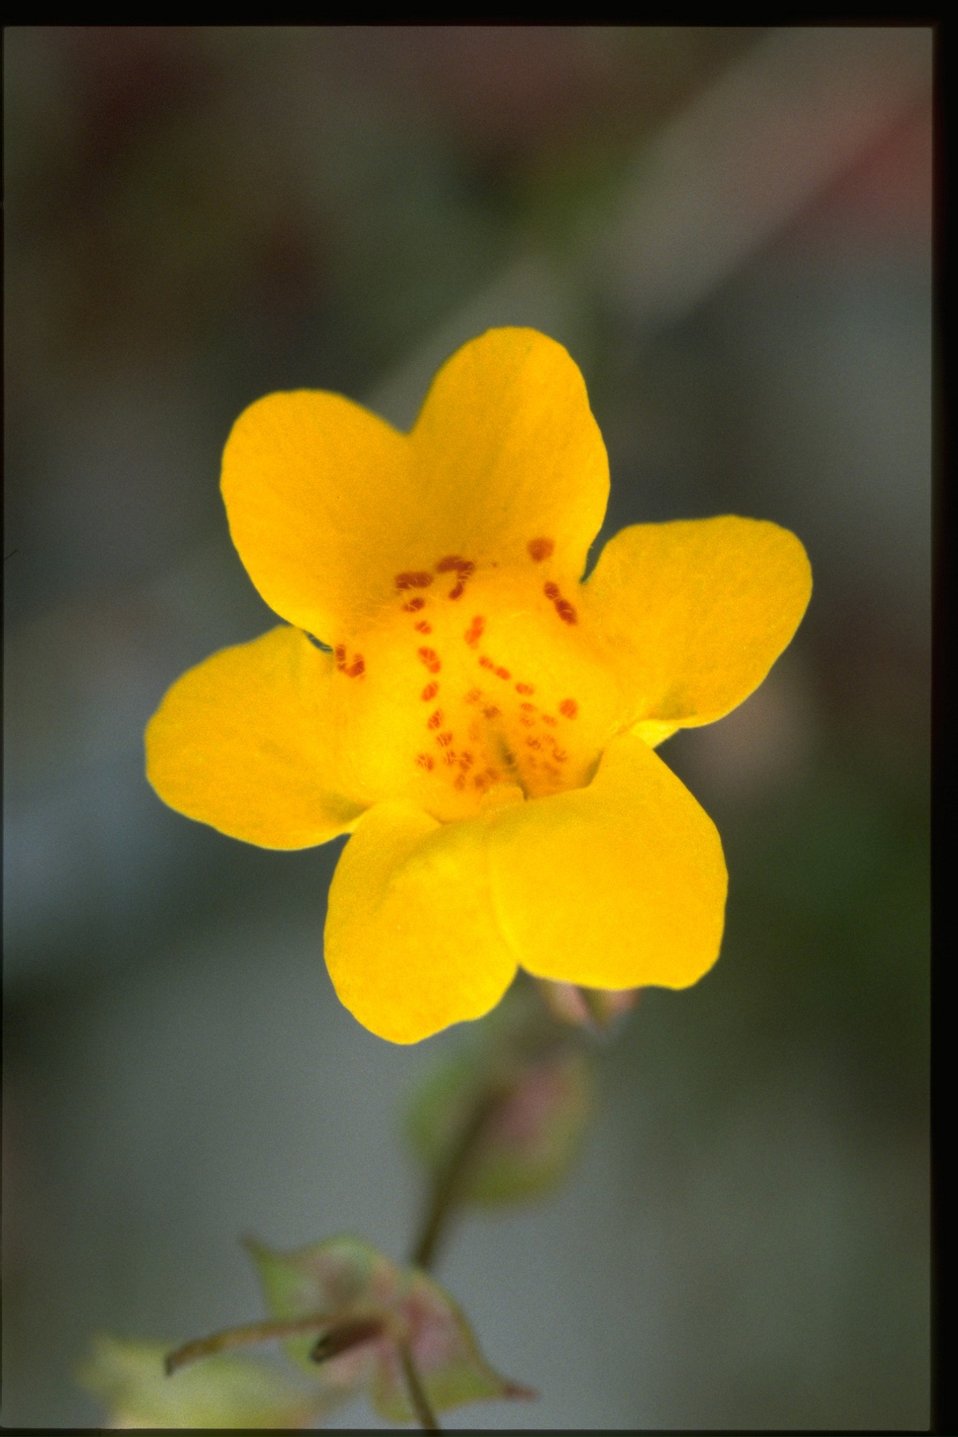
Closeup shot of Mimulus guttatus.